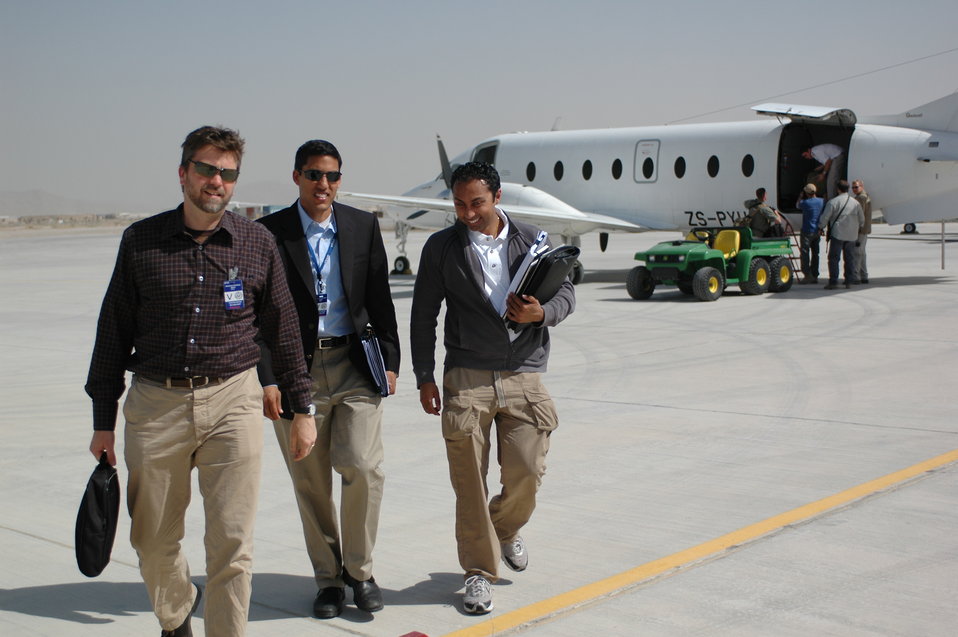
Dr Shah Visits Kandahar April 9, 2010